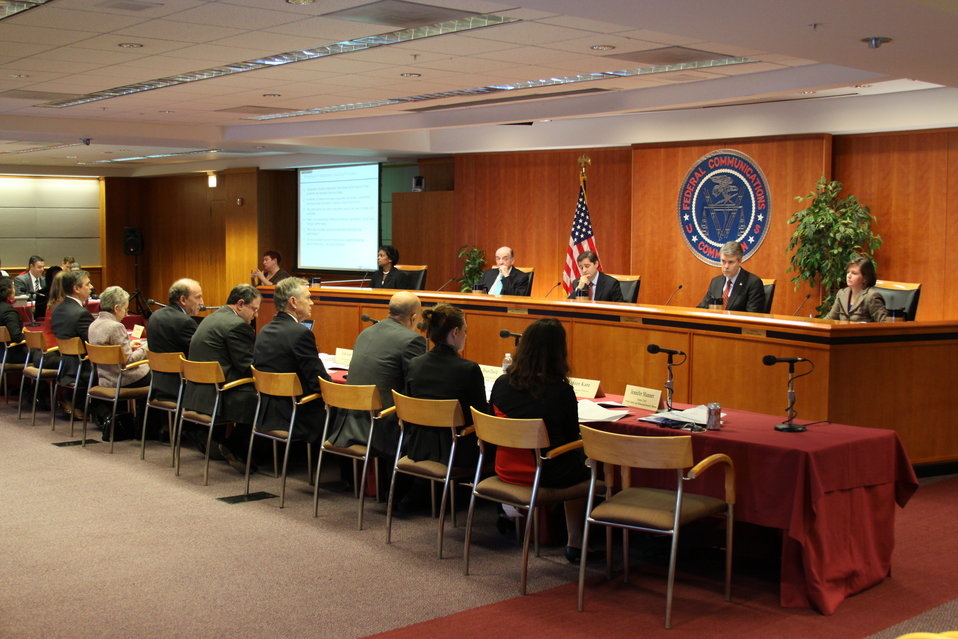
December Commission Meeting